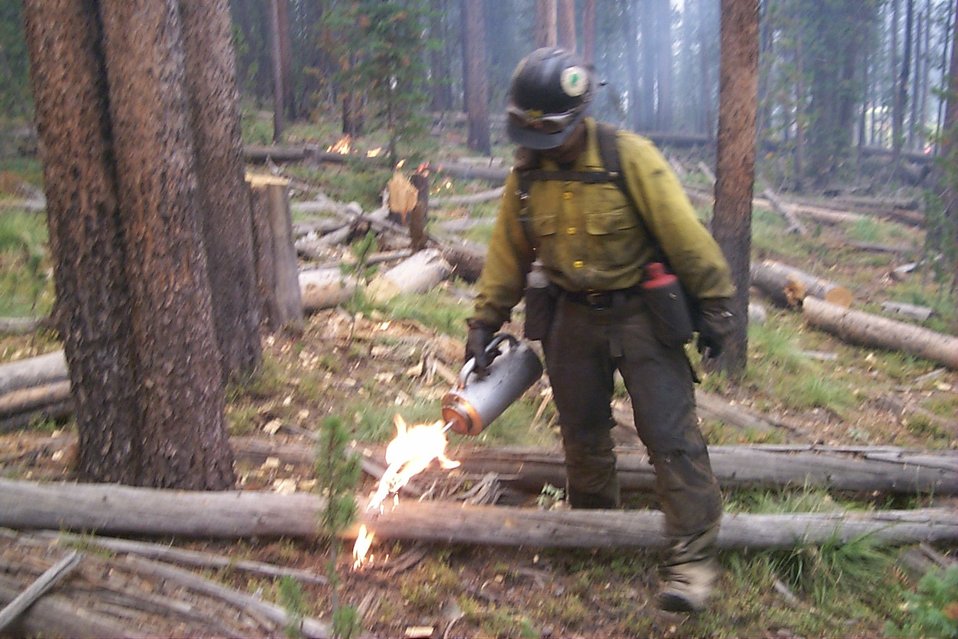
Controlled burn Fire Clearwater Fire Salmon Field Office USRD Upper Snake River District